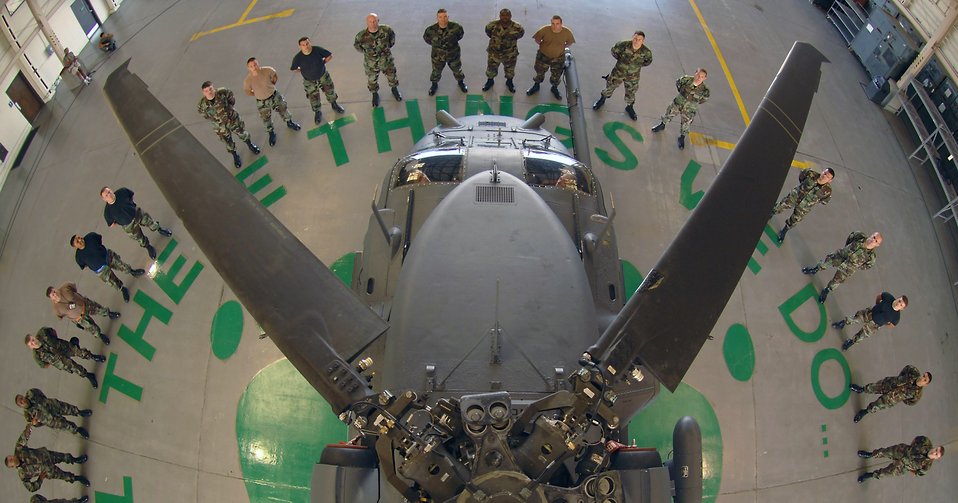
Paving the way

Helicopter maintainers of the 723rd Aircraft Maintenance Squadron gather around an HH-60G Pave Hawk combat search and rescue helicopter Oct. 25 at Moody Air Force Base, Ga. Maintainers prepare their aging aircraft for daily missions to support their motto,